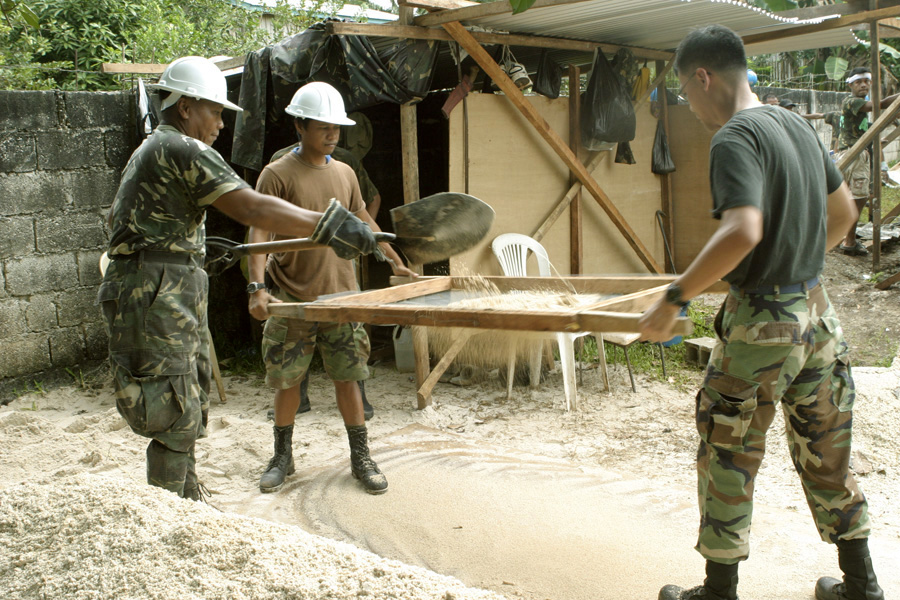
Balikatan 2006

JOLO, Philippines (AFPN) -- Armed Forces of the Philippines engineers and an Airman work at the construction site of a three-room school, an addition to the existing Sulu High School, Feb. 20. This is one of several civil action programs taking place during Exercise Balikatan 2006.